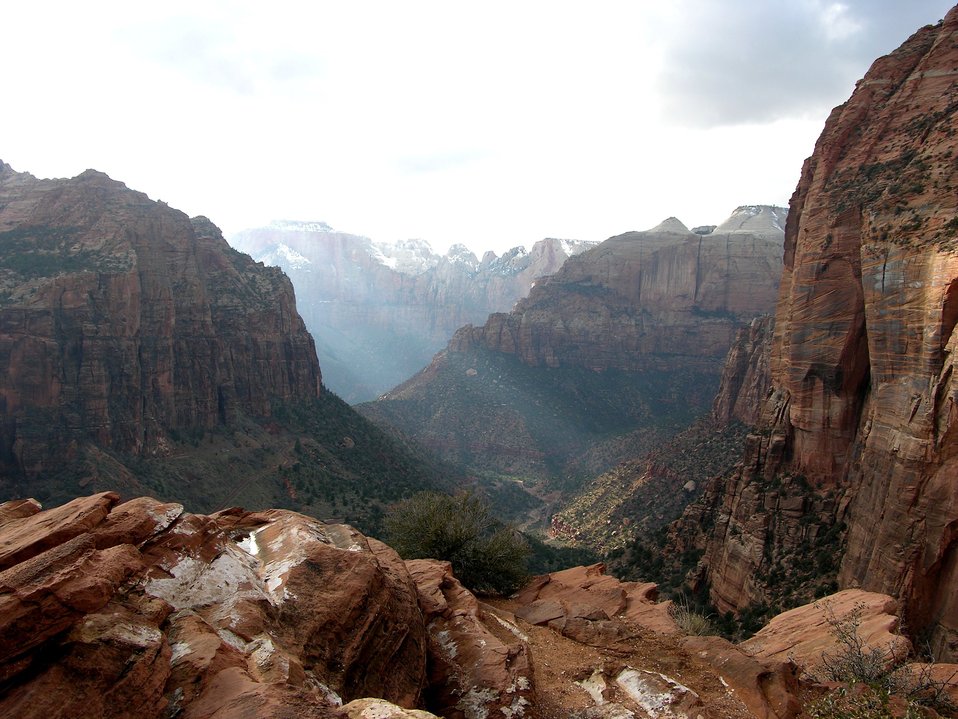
A view in Zion National Park